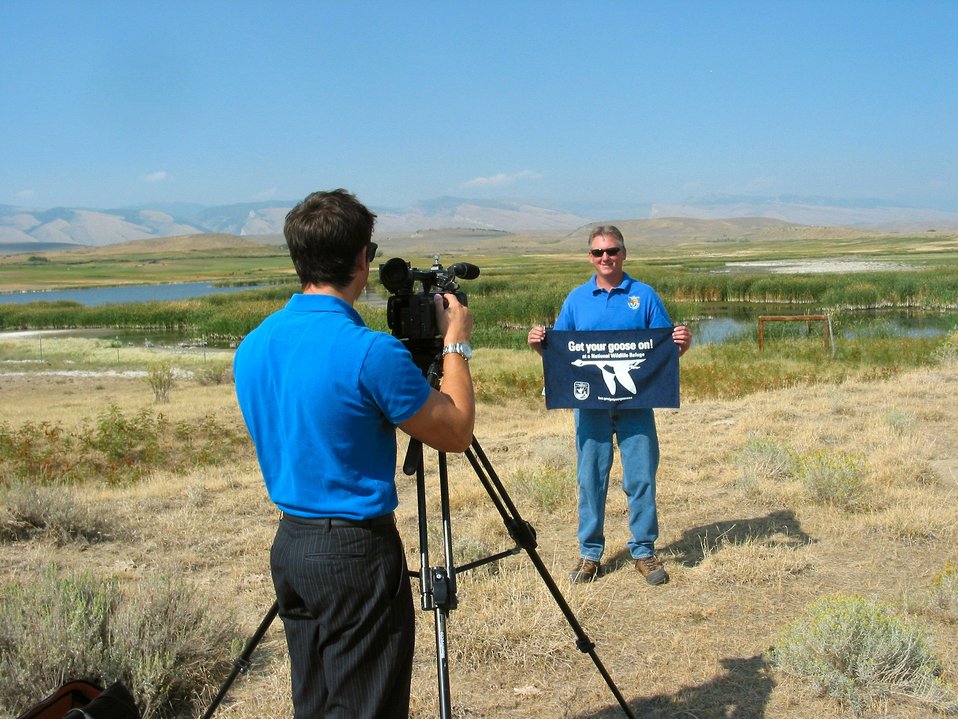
GYGO! - NBC News Style

USFWS employee, Mark Hogan, Gets His Goose On! for NBC news, while talking about the Alkali Lake Project underway on the Wind River Reservation.